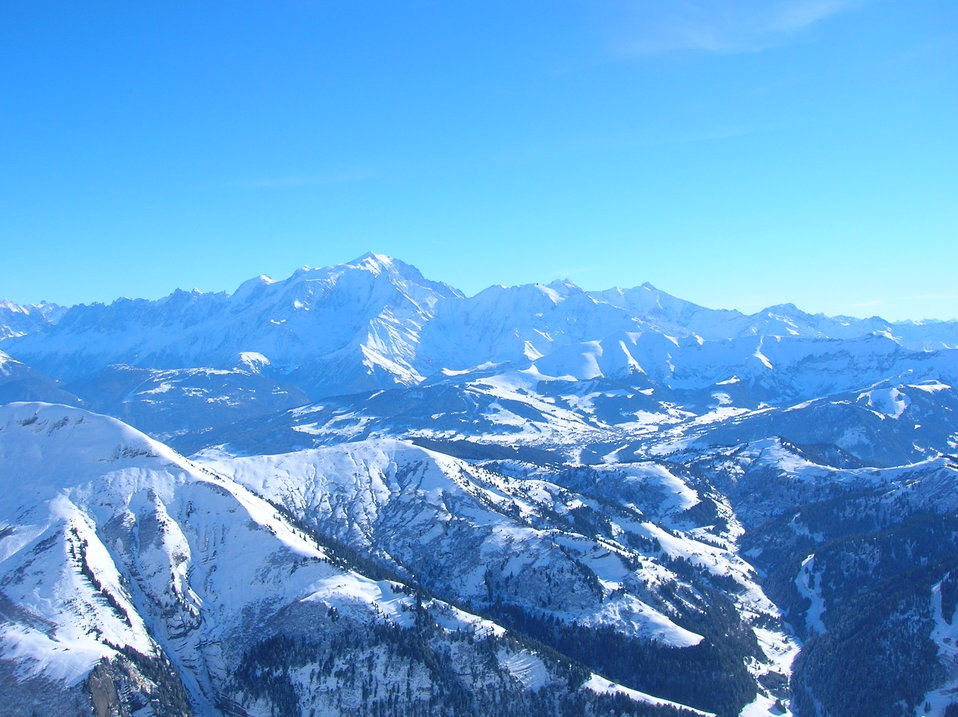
Mt-Blanc (on the centre-left of the picture) seen from the Massif de la Balme (La Clusaz) Fran√ßais†: Mt-Blanc (sur le centre-gauche de la photo) vu depuis le Massif de la Balme (La Clusaz)